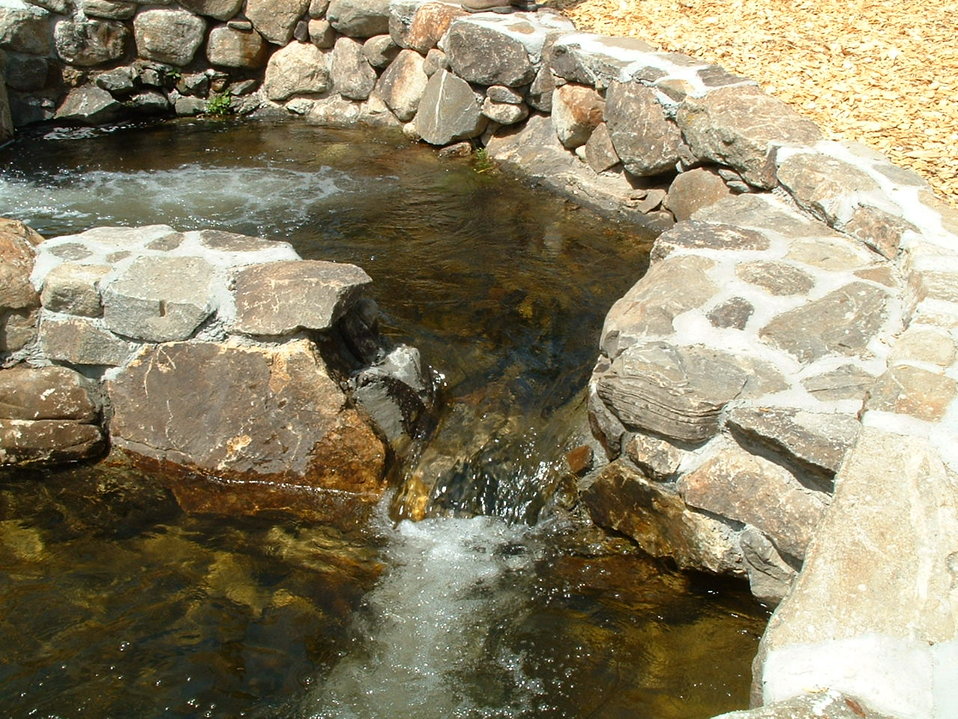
Pool and weir ladder 4